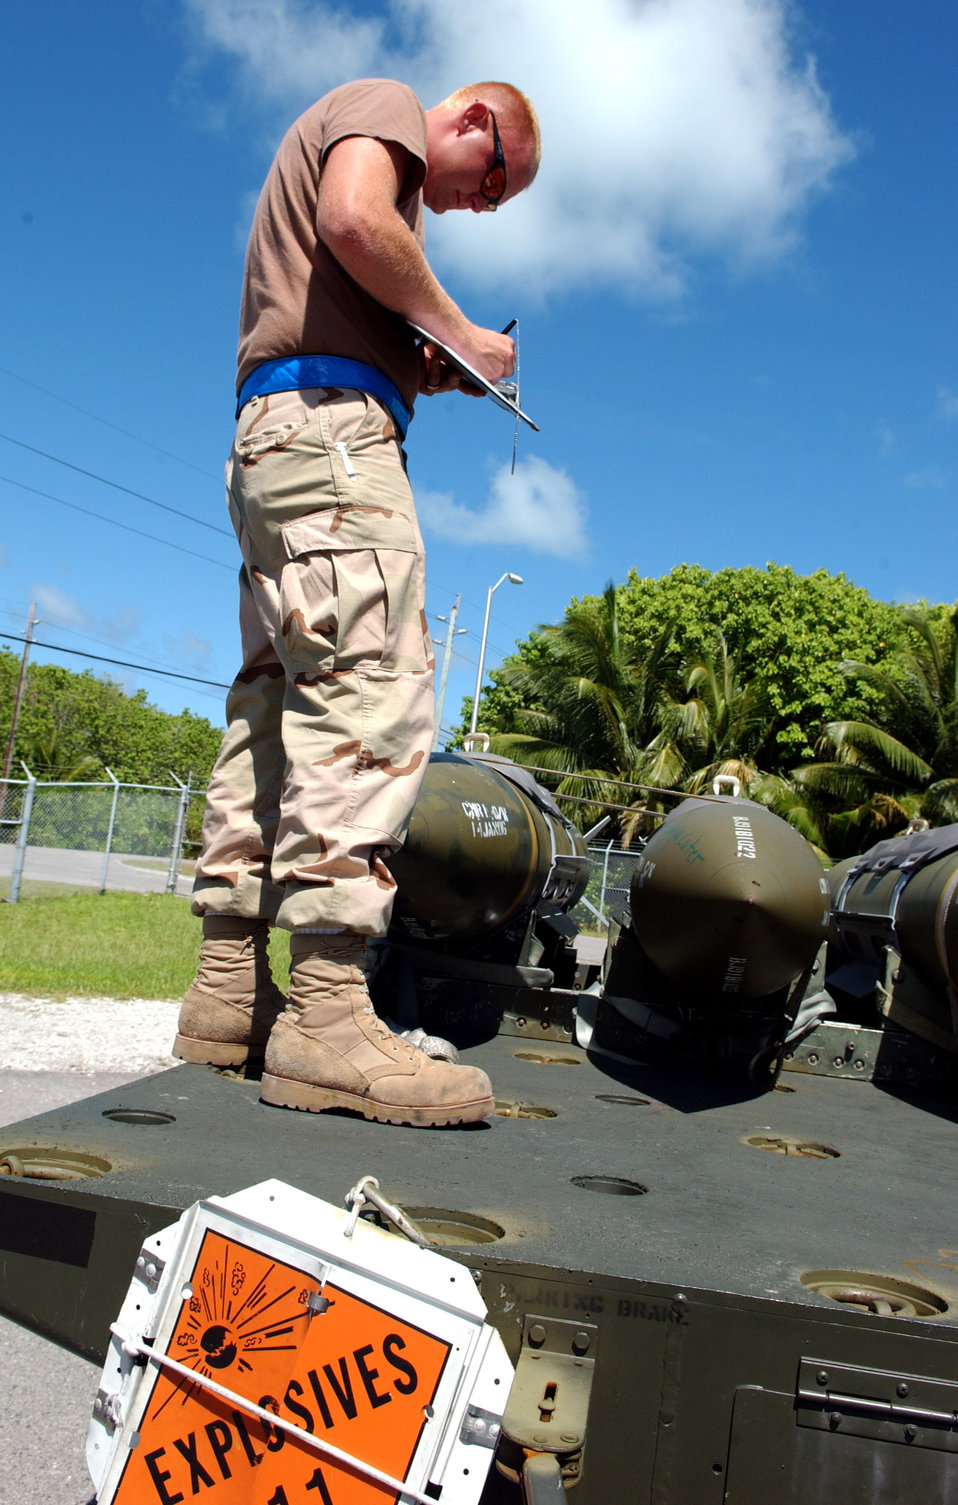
Munitions check

Airman 1st Class Singley Harrell inspects a 2,000-pound bomb before doing a tear down and rebuild of the bomb at a base supporting Operating Enduring Freedom on Wednesday, May 17, 2006. The Airman, of the 40th Air Expeditionary Group, deployed here from Barksdale Air Force Base.